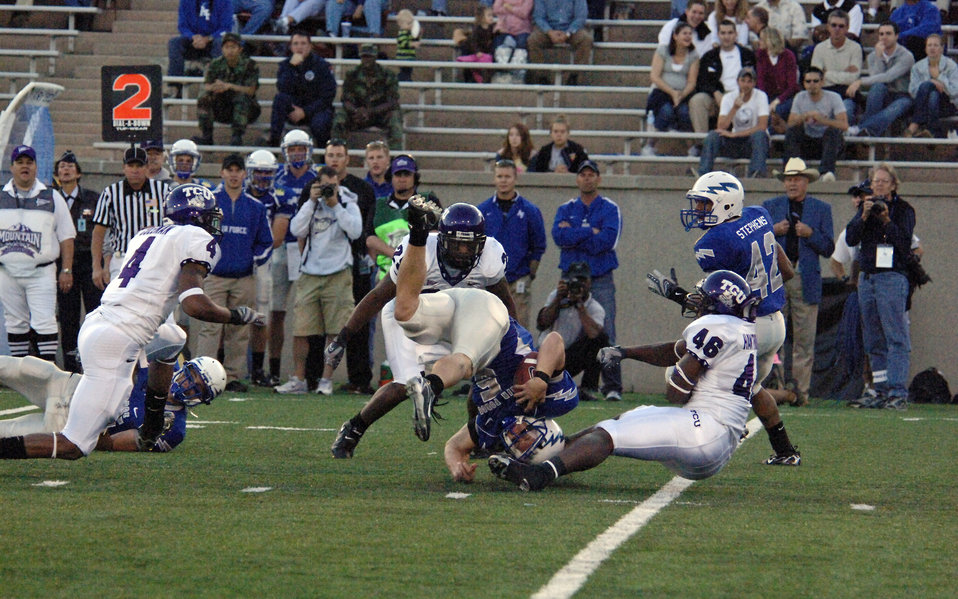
Falcons edge Frogs in overtime

Falcon quarterback Shaun Carney gets flipped between TCU defenders David Hawthorne, 46, and Stephen Hodge, 29, Sept. 13 at Falcon Stadium at the U.S. Air Force Academy. Despite getting sacked four times, Carney and company recovered to edge the Horned Frogs, 20-17, in overtime.